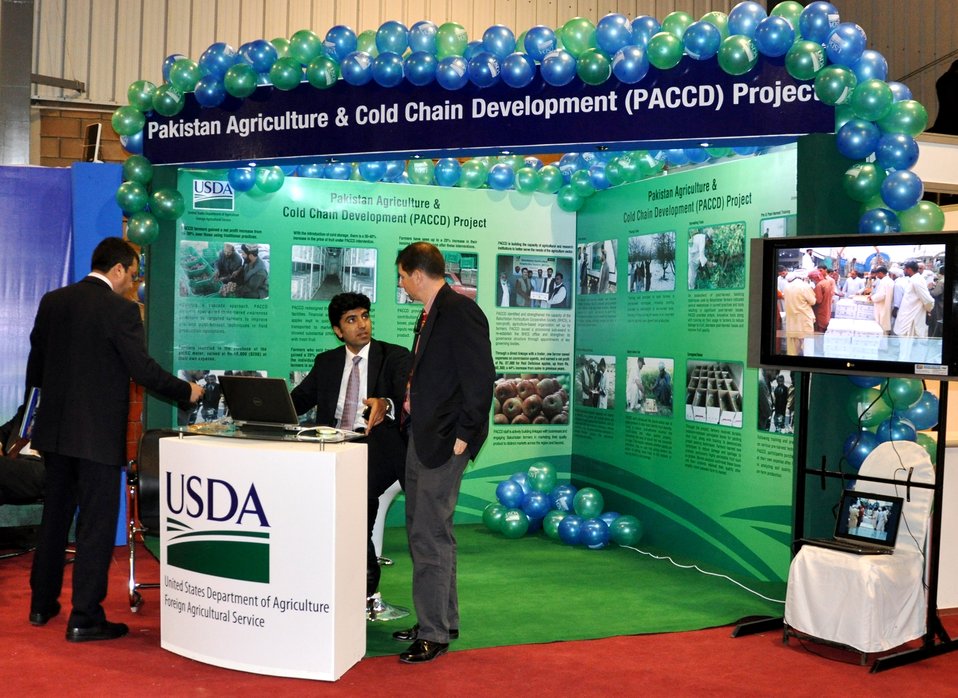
USDA